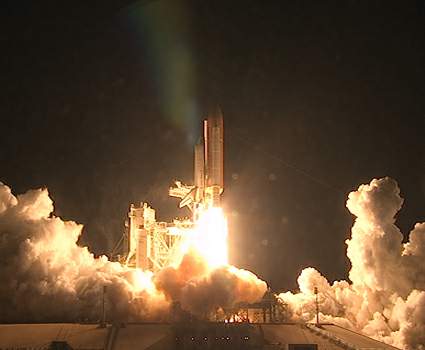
Airmen support space shuttle launch

Space Shuttle Endeavour lifts off from Launch Pad 39A on its mission to deliver the Tranquility module and Cupola, a robotic control station that provides a 360-degree view, to the International Space Station early Feb. 8, 2010, from Cape Canaveral Air Force Station, Fla.